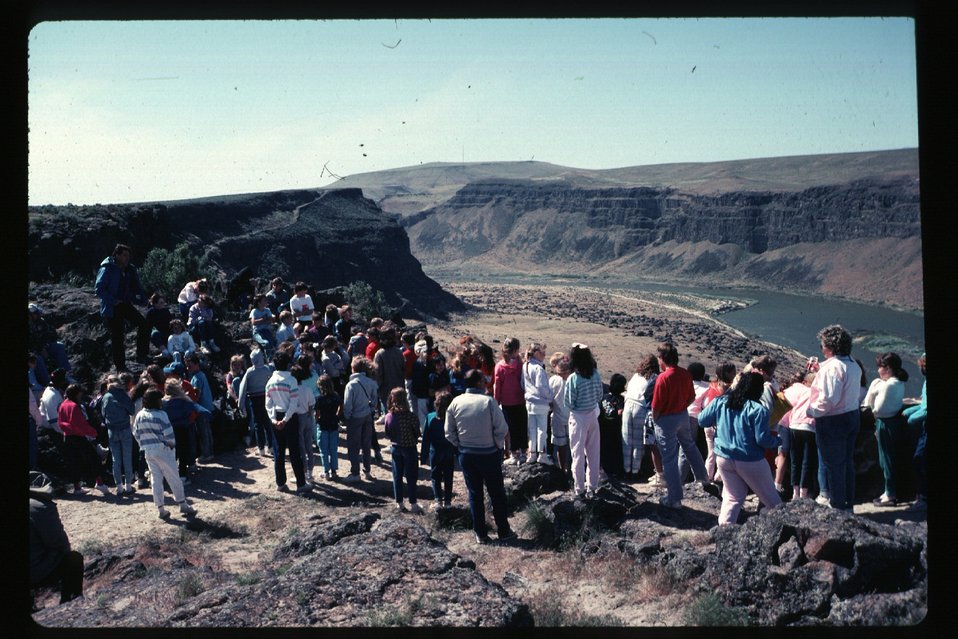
School Group at Dedication Point Environmental Education Birds of Prey National Conservation Area BOP NCA Owyhee Field Office LSRD Lower Snake River District